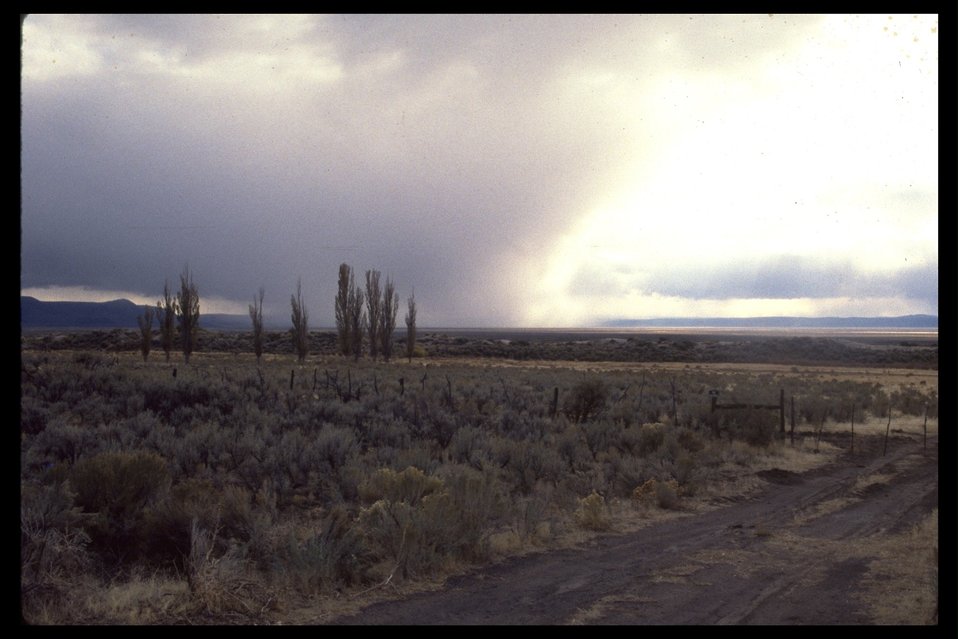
Storm in south Catlow.